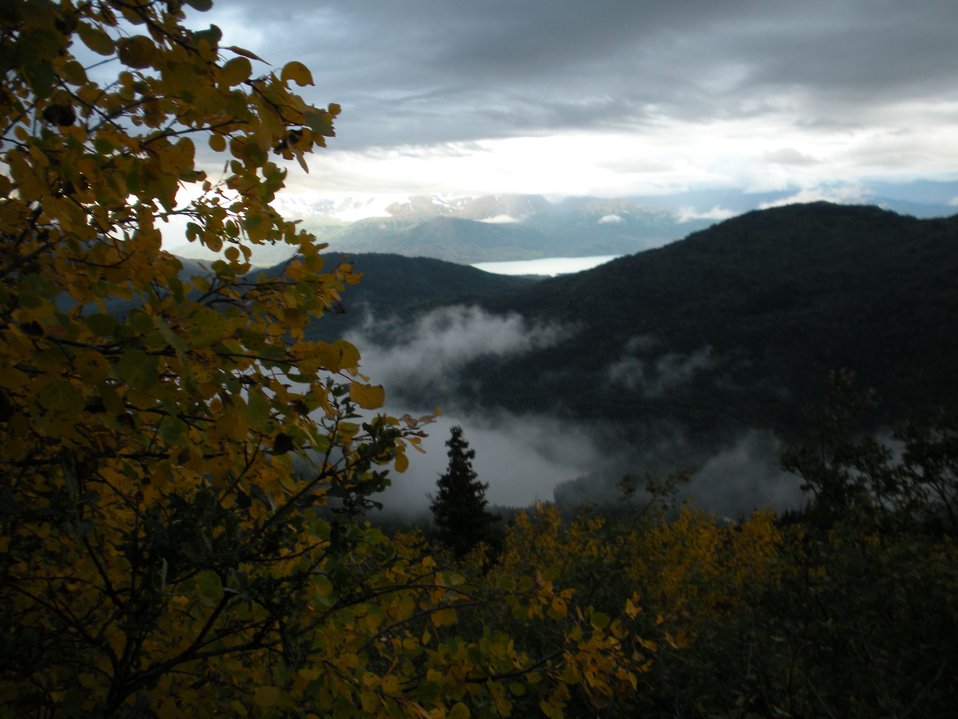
Skyline Trail 2

Kenai National Wildlife Refuge, Alaska.